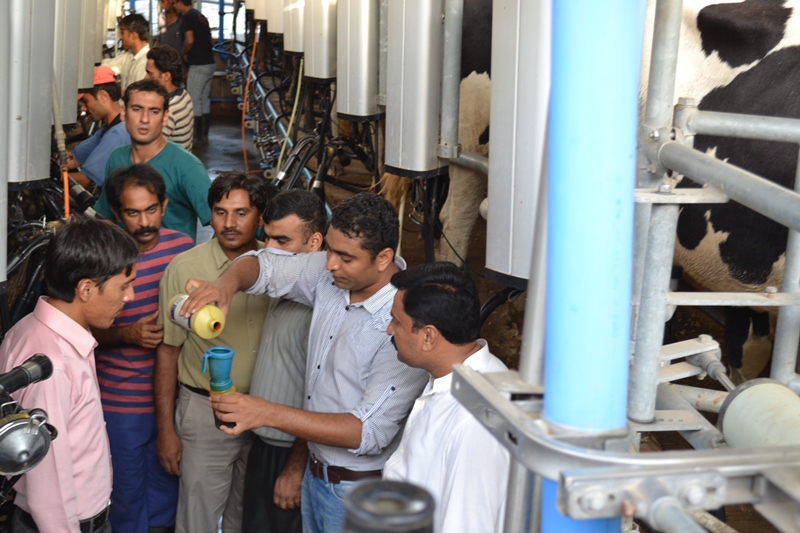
5 - First batch of Dairy Project farm manager trainees attending Farm Managers Training by USAId Dairy Project